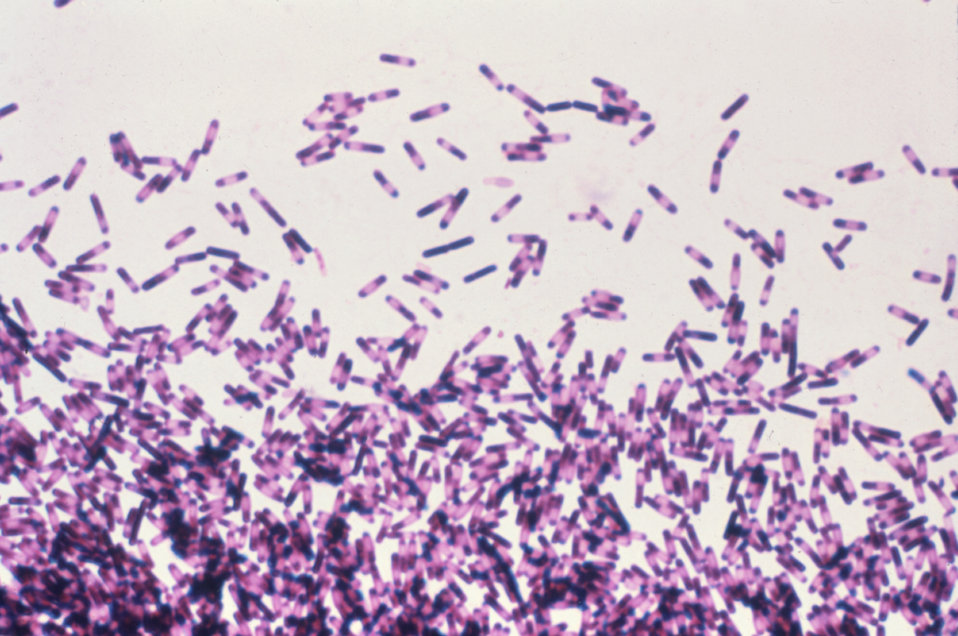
This micrograph of the bacterium Clostridium difficile is made from an impression smear of 72hr anaerobe blood agar.